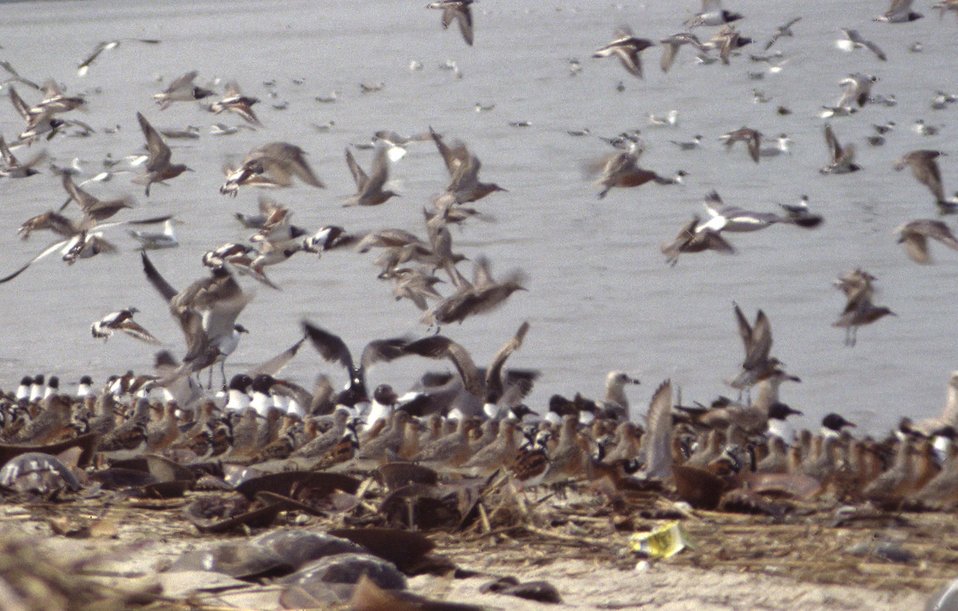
Reed's Beach

New Jersey.